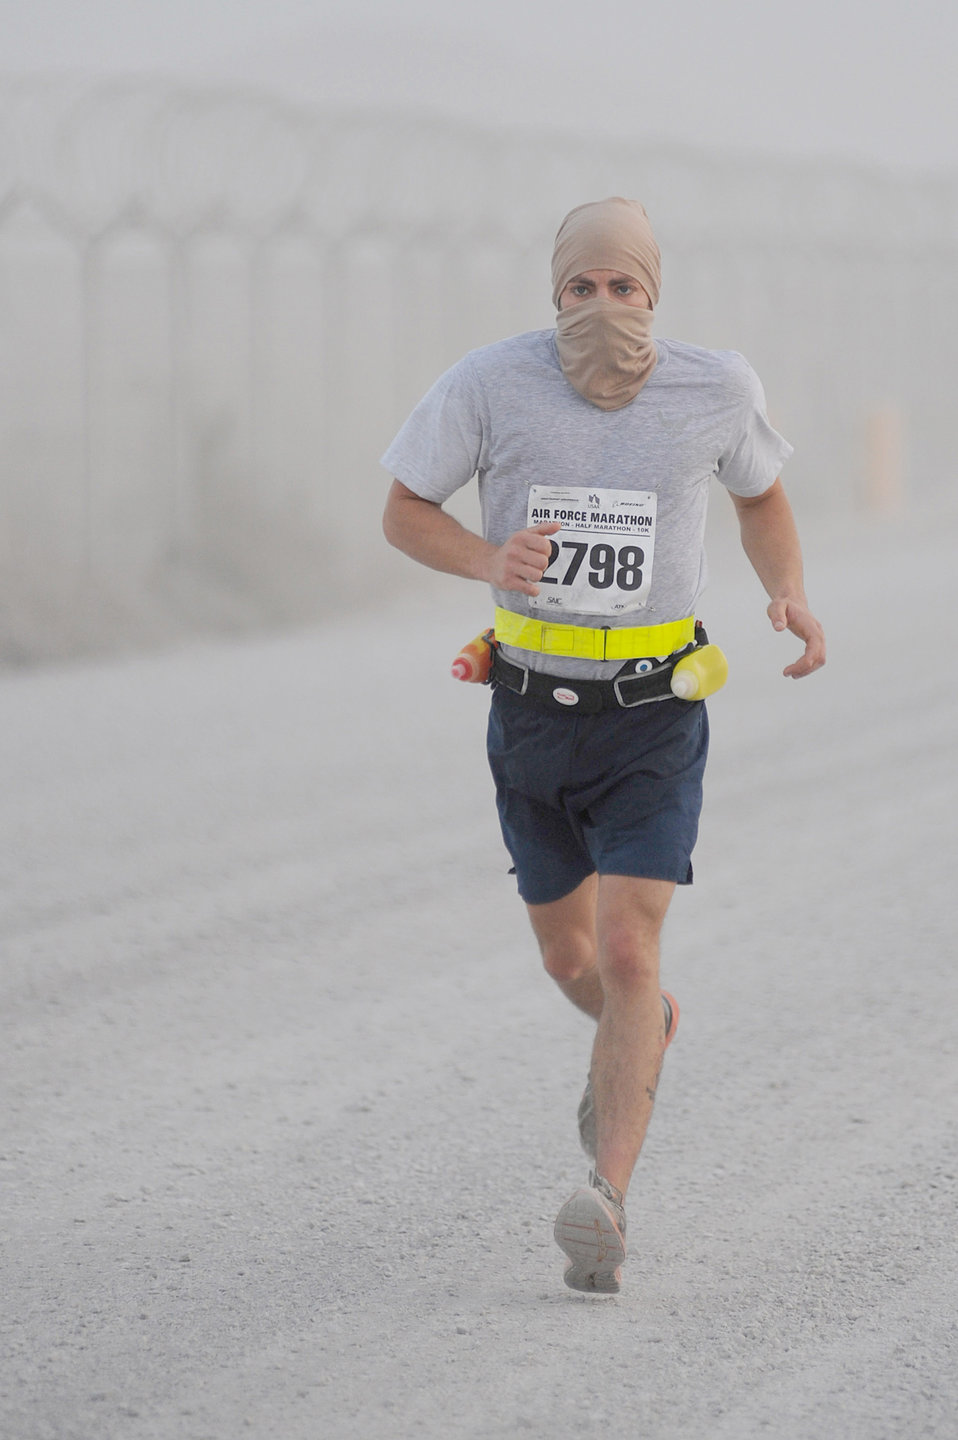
Deployed Air Force Marathon mirrors annual stateside race

Staff Sgt. Joe Daly runs around the flightline during the Air Force Marathon Sept. 11, 2010, at Kandahar Airfield, Afghanistan. Sergeant Daly is assigned to the 451st Expeditionary Aircraft Maintenance Squadron.